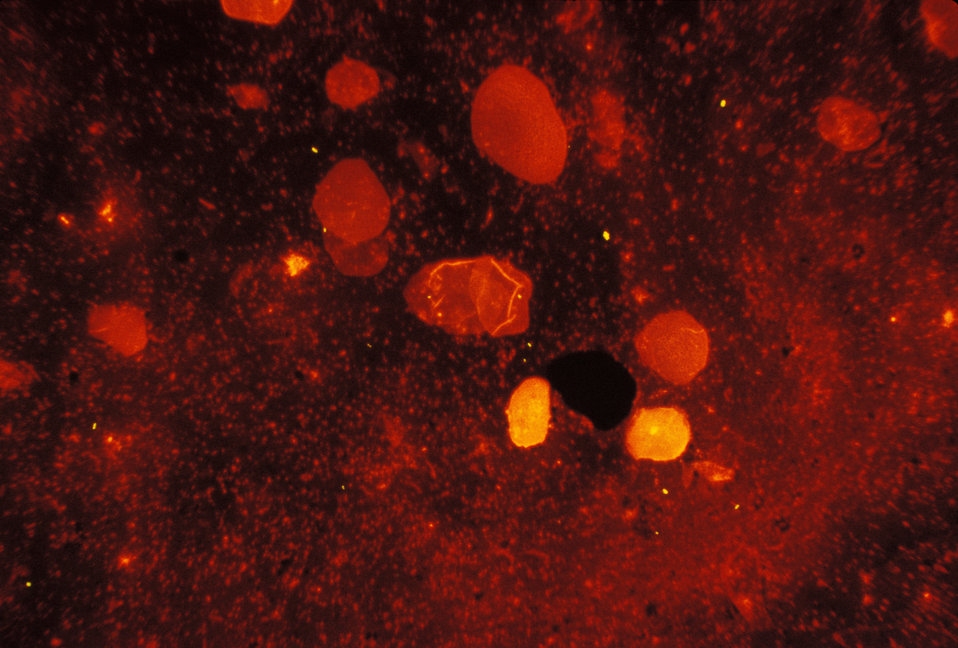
Here we see Mycobacterium tuberculosis in a sputum smear is stained using fluorescent acid-fast stain.